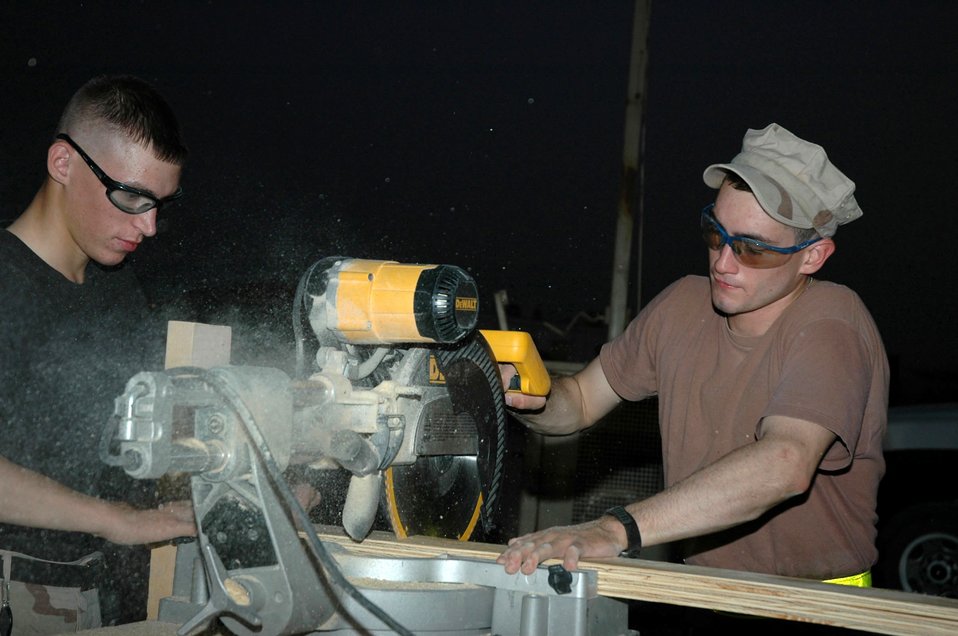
Civil engineer units have different missions, same goal

LOGISTICS SUPPORT AREA ANACONDA, Iraq -- Airmen 1st Class Scott Wise (left) and Adam Barnes with the 732nd Expeditionary Civil Engineer Squadron Detachment 6 vertical shop work to build 30 new 3,000-square-foot living quarters for Soldiers here. Both Airmen are deployed from Dover Air Force Base, Del.